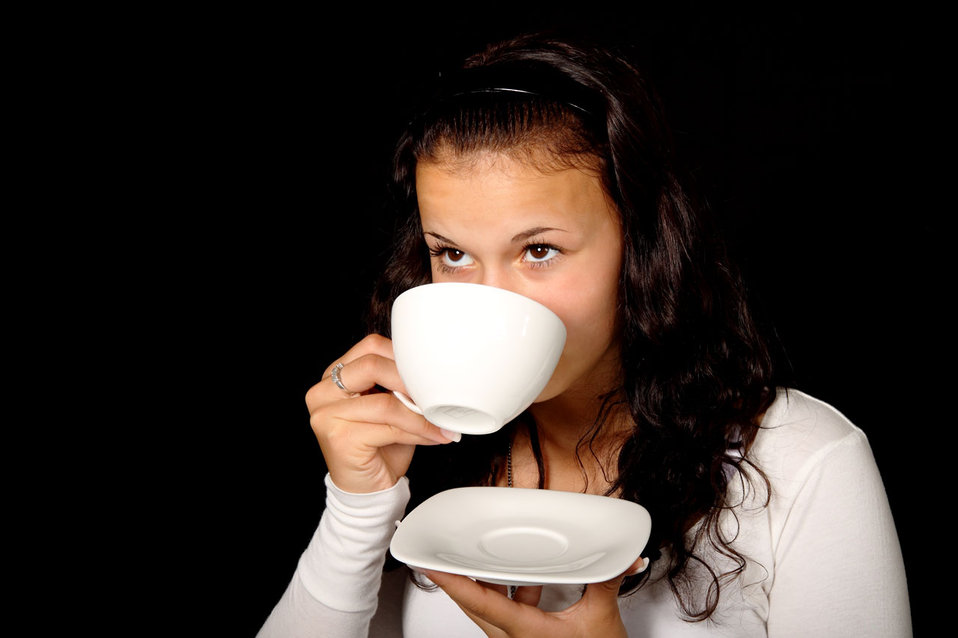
Woman drinking coffee

Young woman drinking coffee.